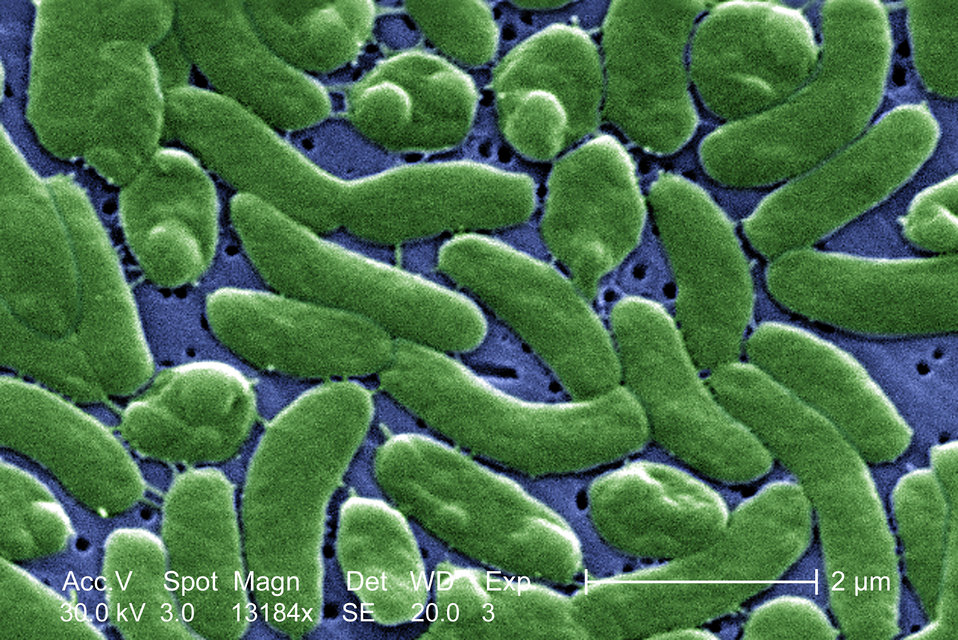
This scanning electron micrograph (SEM) depicts a grouping of Vibrio vulnificus bacteria; Mag. 13184x.